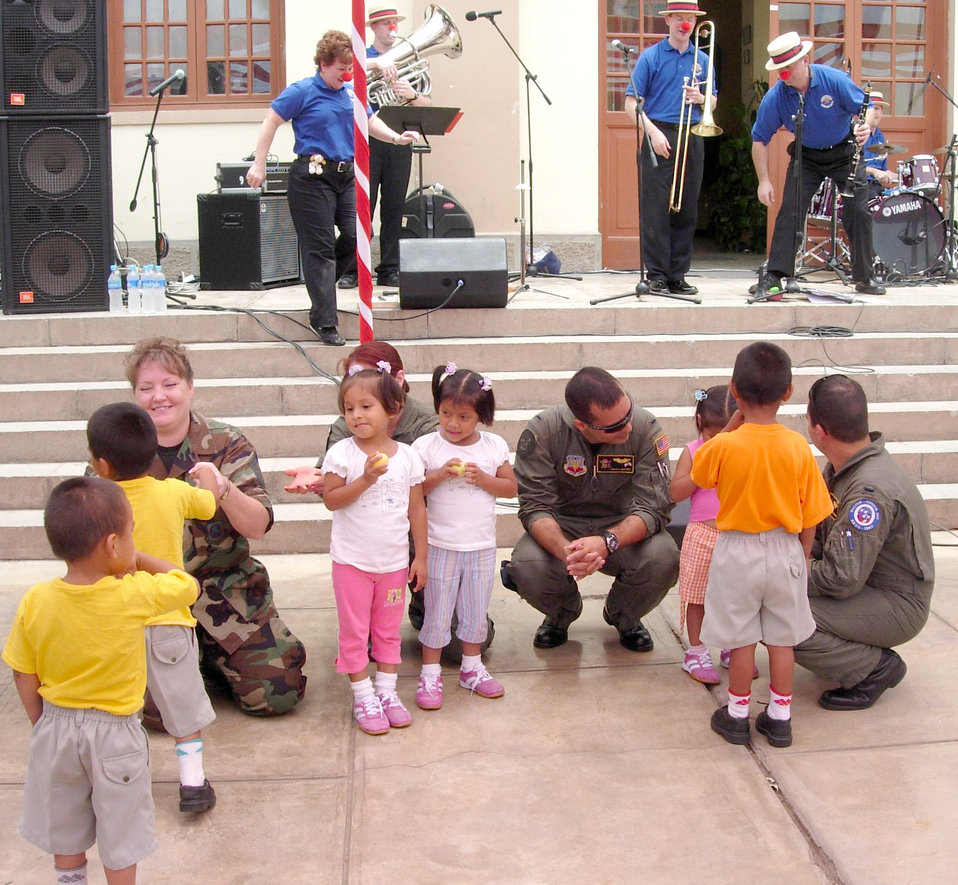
Airmen foster relations as ambassadors

Aircrew members visit with children at a local foster home Feb. 16 at Lima, Peru. Airmen in Peru wrapped up the joint exercise Falcon and Condor 2007 this week and are remaining there for the first joint air show with the Peruvian Air Force this weekend. The Peruvian air show will be the first of the year for aircraft from the 12th Air Force and Air Forces Southern. The joint exercise and air show directly supports U.S. Southern Command's engagement goals and furthers relations between allied nations.